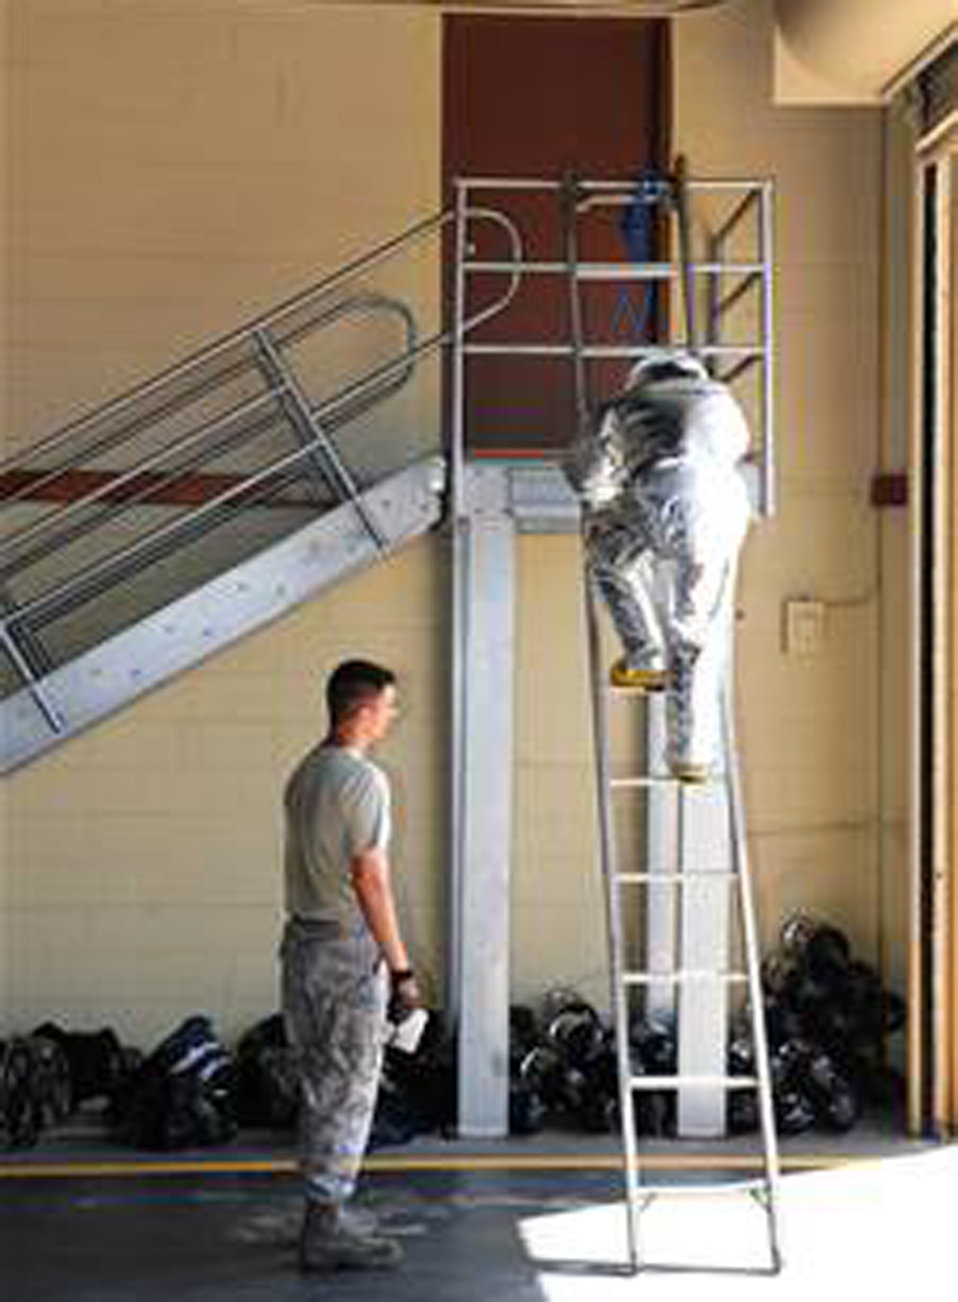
Academy cadets experience operational Air Force

Staff Sgt. Dan Flick counts the steps as a U.S. Air Force Academy cadet runs up an eight-step ladder three times in a firefighter physical training competition May 19 at Andersen Air Force Base, Guam. The fire house offered a unique perspective for the third-year cadets as the cadets observed enlisted personnel in action in leadership positions. Sergeant Flick is assigned to the 36th Civil Engineer Squadron fire department.